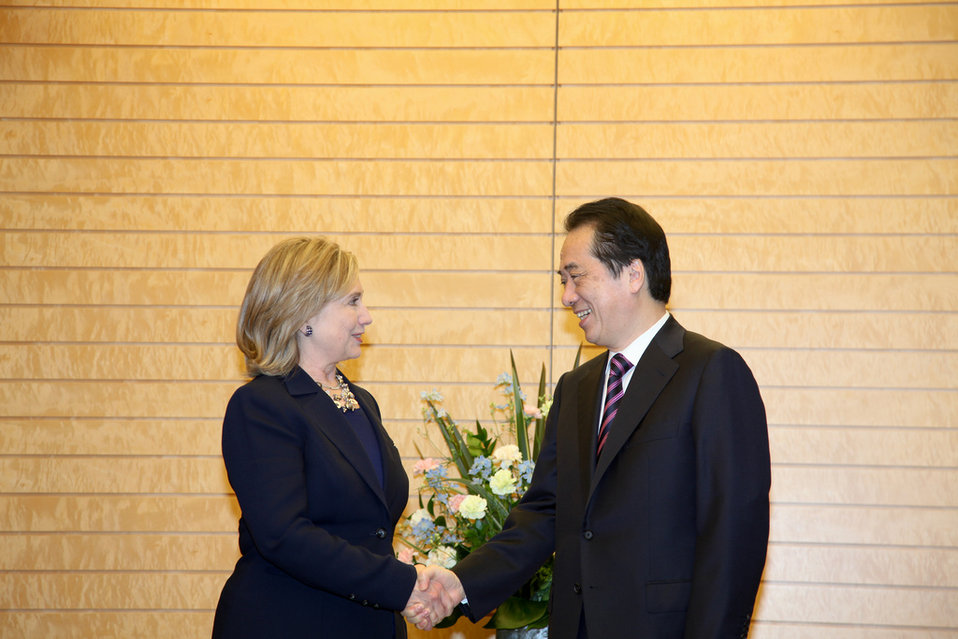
Secretary Clinton Is Greeted By Japanese Prime Minister Kan

U.S. Secretary of State Hillary Rodham Clinton is greeted by Japanese Prime Minister Naoto Kan at his official residence, the Kantei, in Tokyo, Japan, on April 17, 2011.